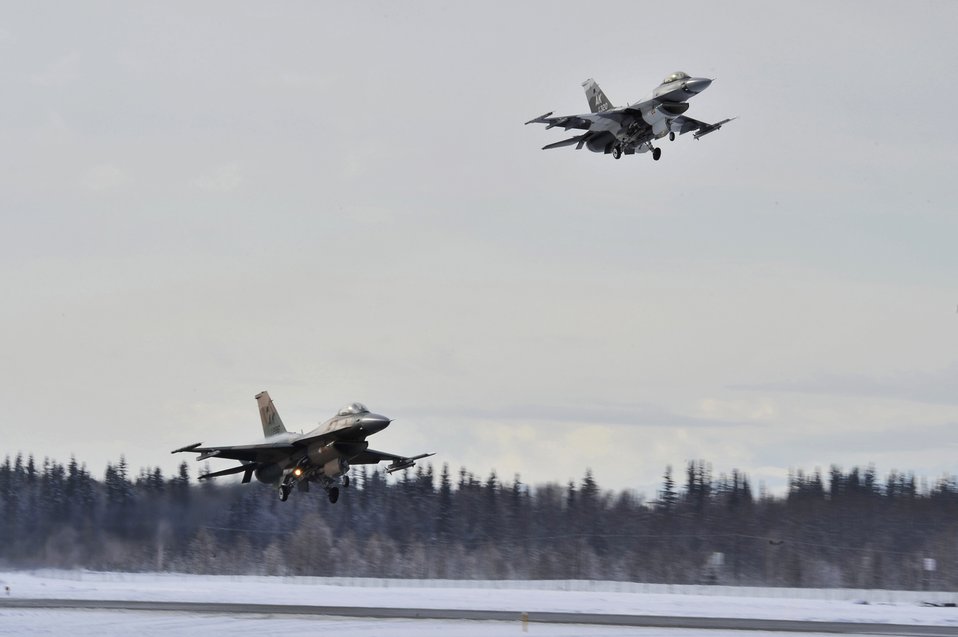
F-16s at Eielson

Two F-16 Fighting Falcons approach the runway April 8, 2011, at Eielson Air Force Base, Alaska.